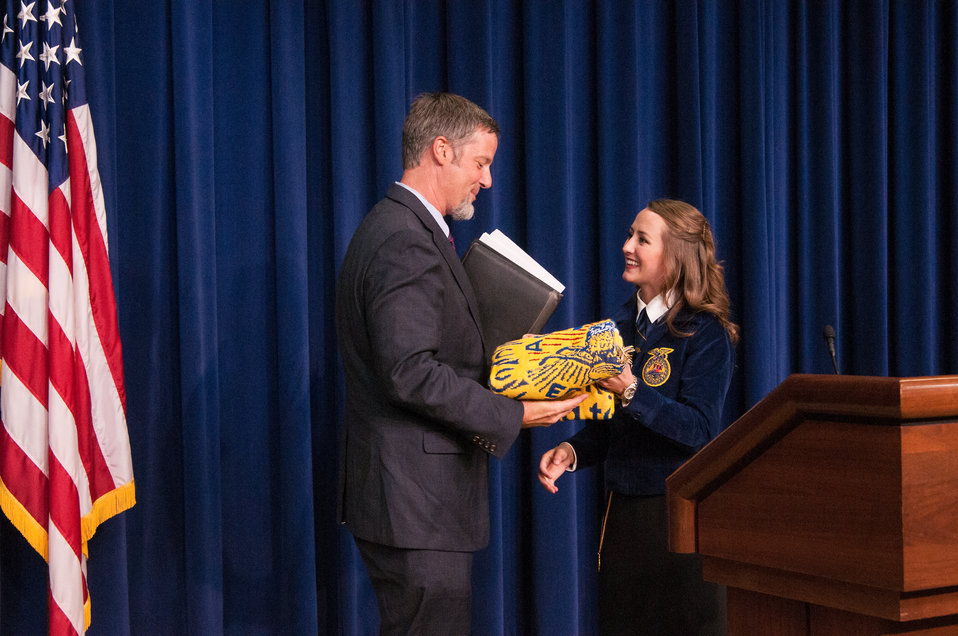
White House Domestic Policy Council Senior Policy Advisor for Rural Affairs Doug McKalip accepts a token of appreciation from FFA National Secretary Kalie Hall (GA), at a meeting of the White House Rural Council on Wednesday, Jul. 24, 2013 in Washington, D.C. McKalip discussed White House Initiatives for rural America and thanked the FFA for their efforts.